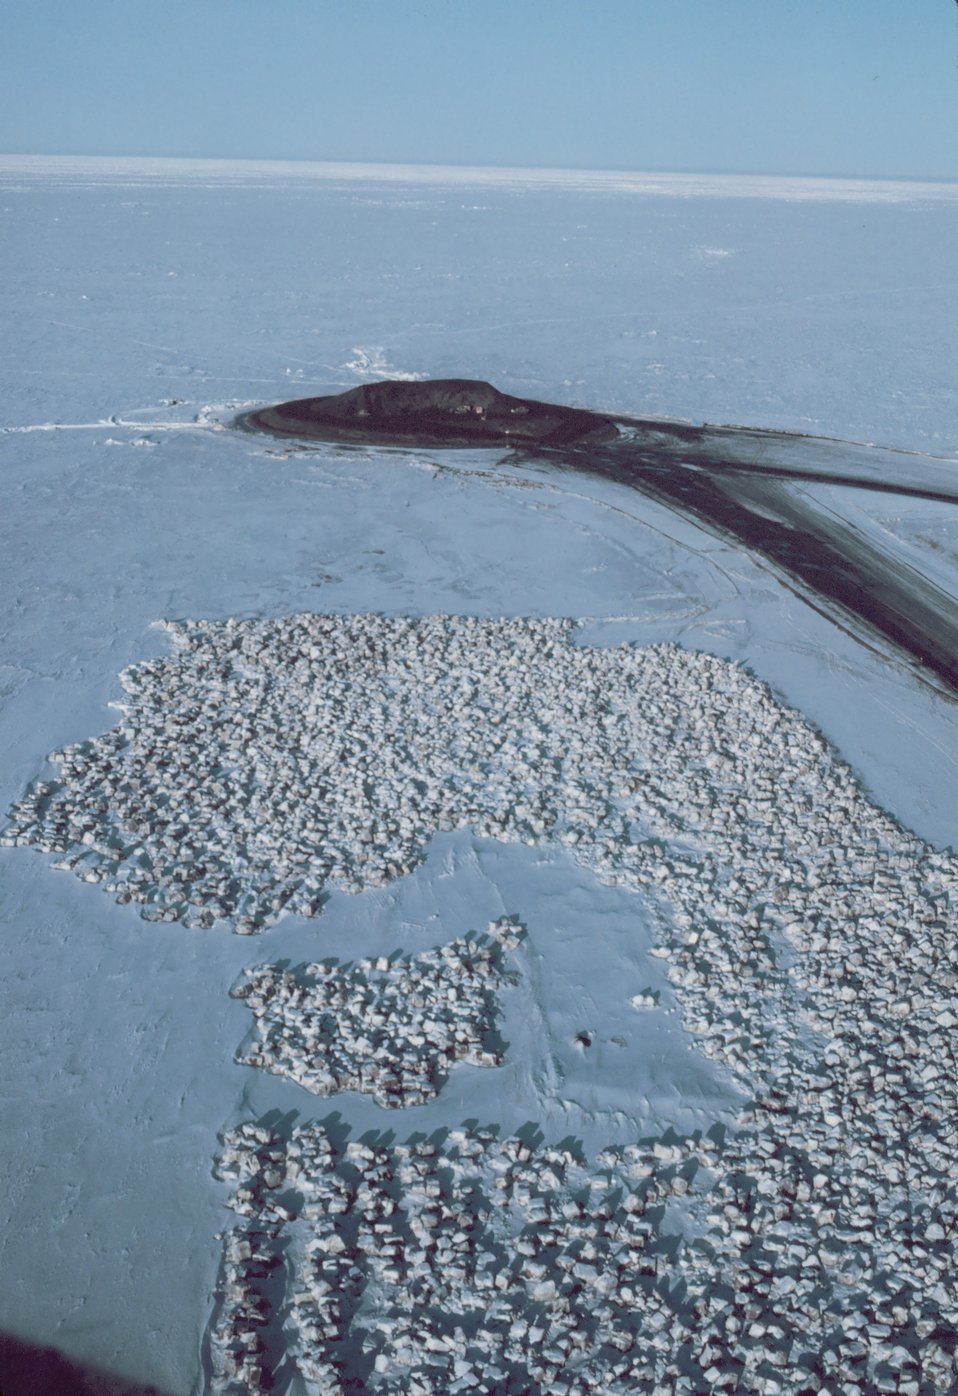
Building an artificial island in the Beaufort Sea.